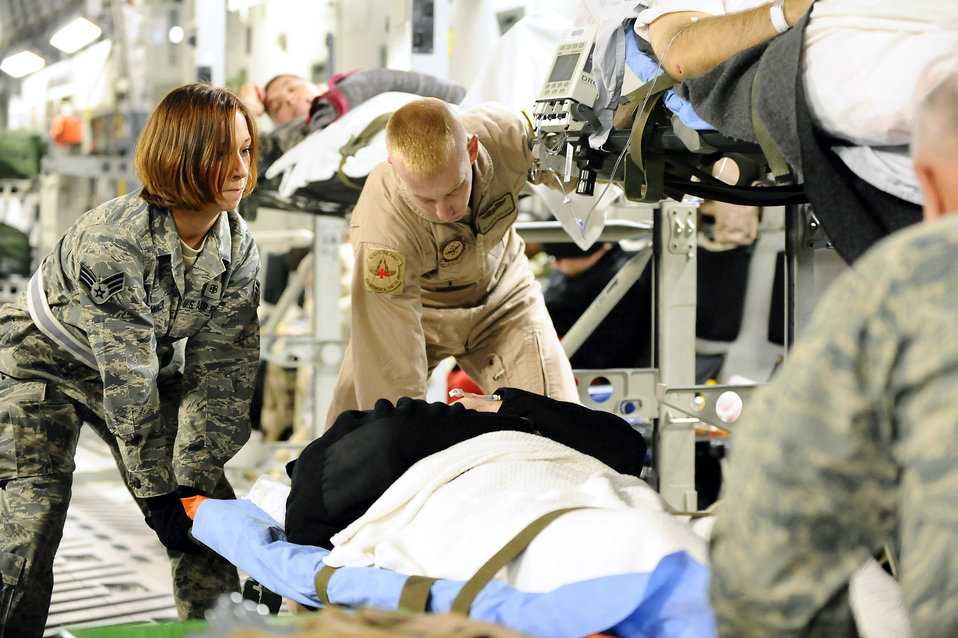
Warrior care

Senior Airman Samantha Brunner helps rack a patient onto a C-17 Globemaster Nov. 27 at Joint Base Balad, Iraq. Litter-bound patients are carefully secured onto the aircraft before flight. Airman Brunner, an aerospace medical service journeyman with the 332nd Expeditionary Aerospace Medical Squadron and native of Washington, Pa., is deployed from the 911th Airlift Wing at Pittsburgh International Airport Air Reserve Station, Pa.